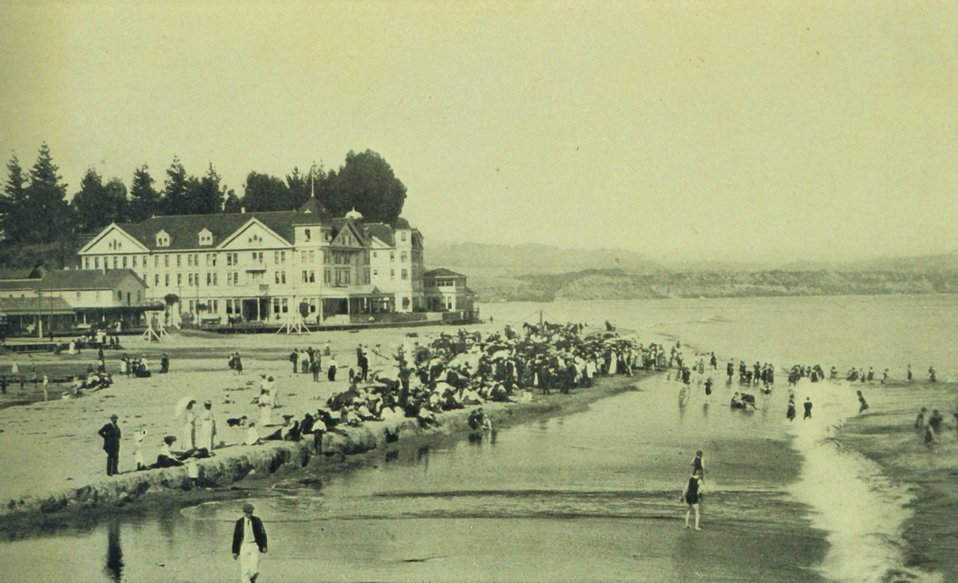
Beach scene at Capitola, a few miles to the east of Santa Cruz. In: 'The City of Santa Cruz and VicinityCalifornia.' Published by The Santa Cruz Board of Trade. 1905.